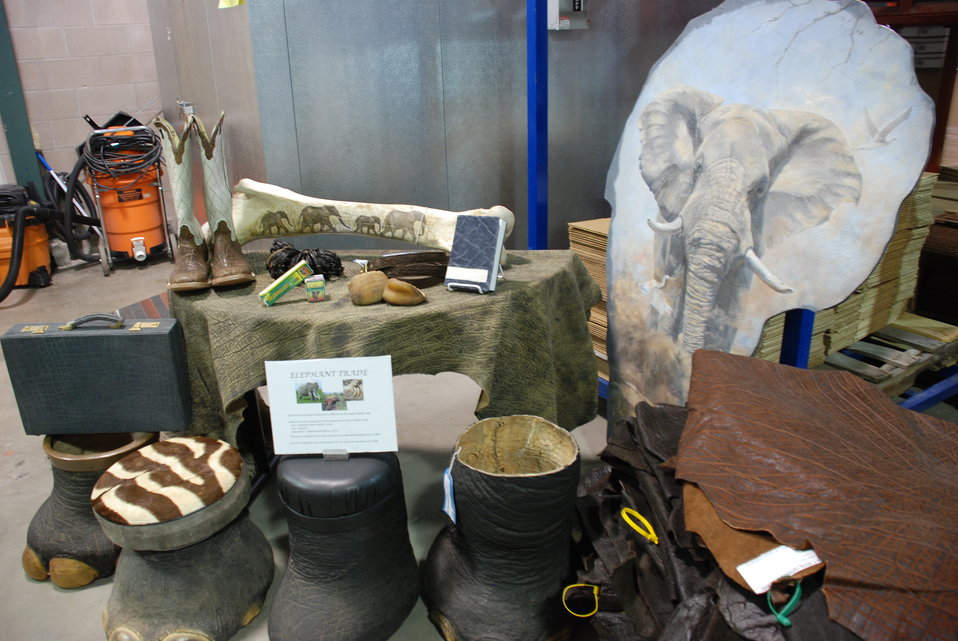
Ivory Crush 2013